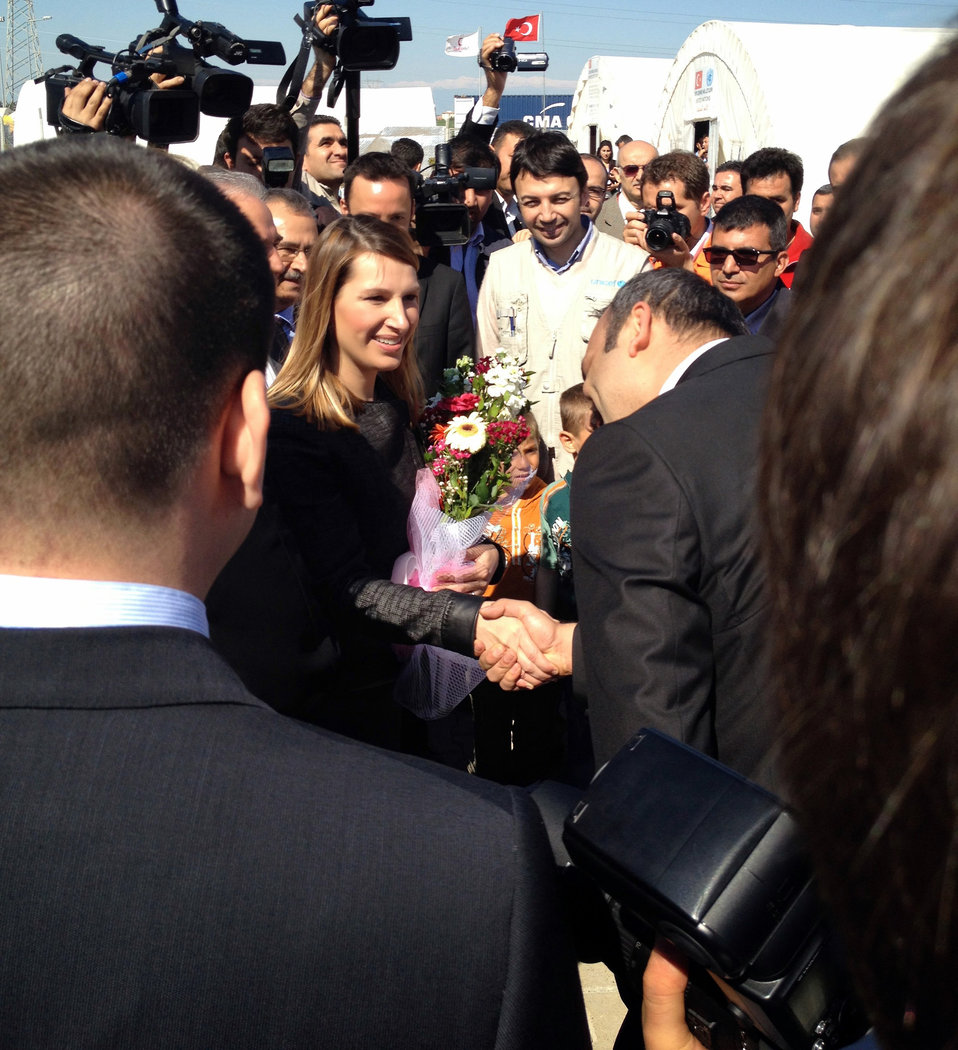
Deputy Secretary Higginbottom Arrives at the Syrian Refugee Camp in Adana

Deputy Secretary of State for Management and Resources Heather Higginbottom is welcomed by a Turkish official upon arriving at the Syrian Refugee Camp outside of Adana, Turkey, on March 21, 2014.